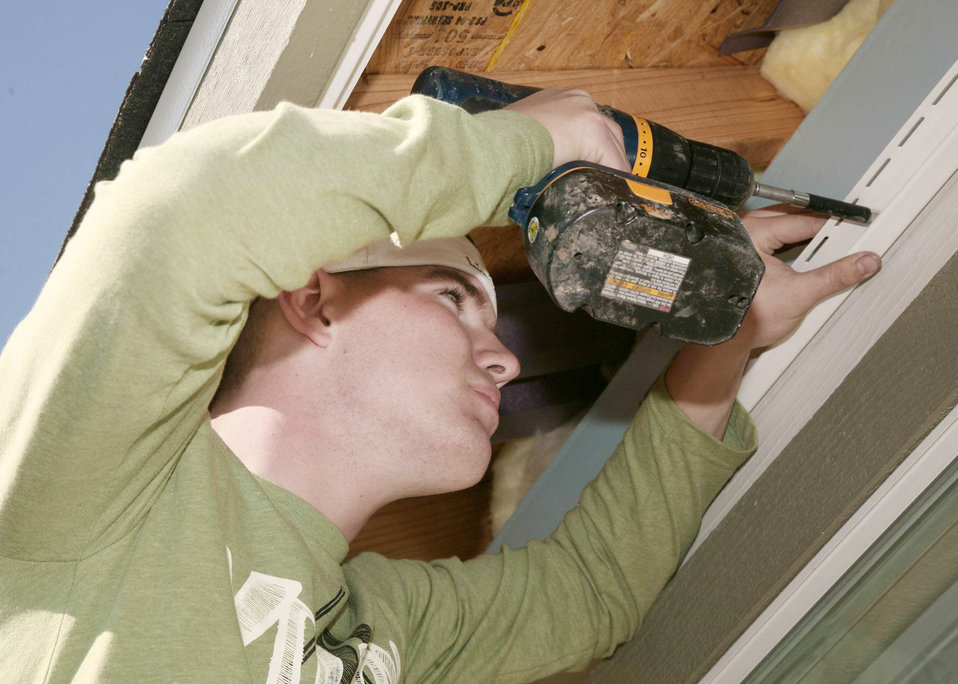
SHIELD program

Airman Kyle Dolloff, a security forces trainee with the 343rd Training Squadron at Lackland Air Force Base, Texas, works on a Habitat for Humanity house Feb. 6, 2010. He was participating in a volunteer project that is part of the 343rd TRS SHIELD -- Service, Honor, Integrity, Excellence and Leadership Development -- program which emphasizes character building.